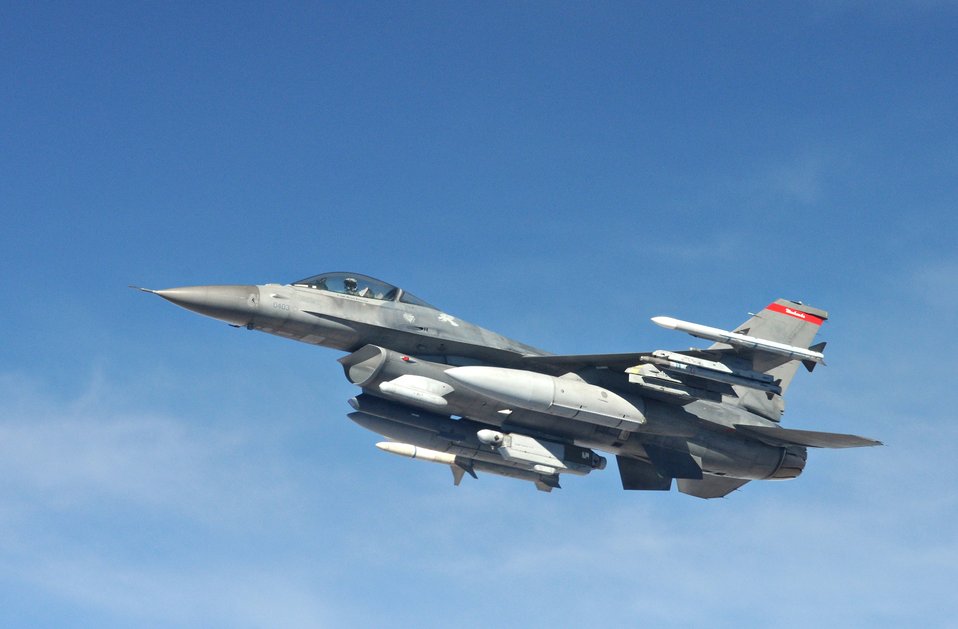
Into the wild blue yonder

An F-16 Fighting Falcon flies above Nellis Air Force Base, Nev., Jan. 27, 2011, during an exercise Red Flag 11-2 mission. Red Flag is a combined exercise that provides a realistic combat training environment to U.S. service members and their allies.